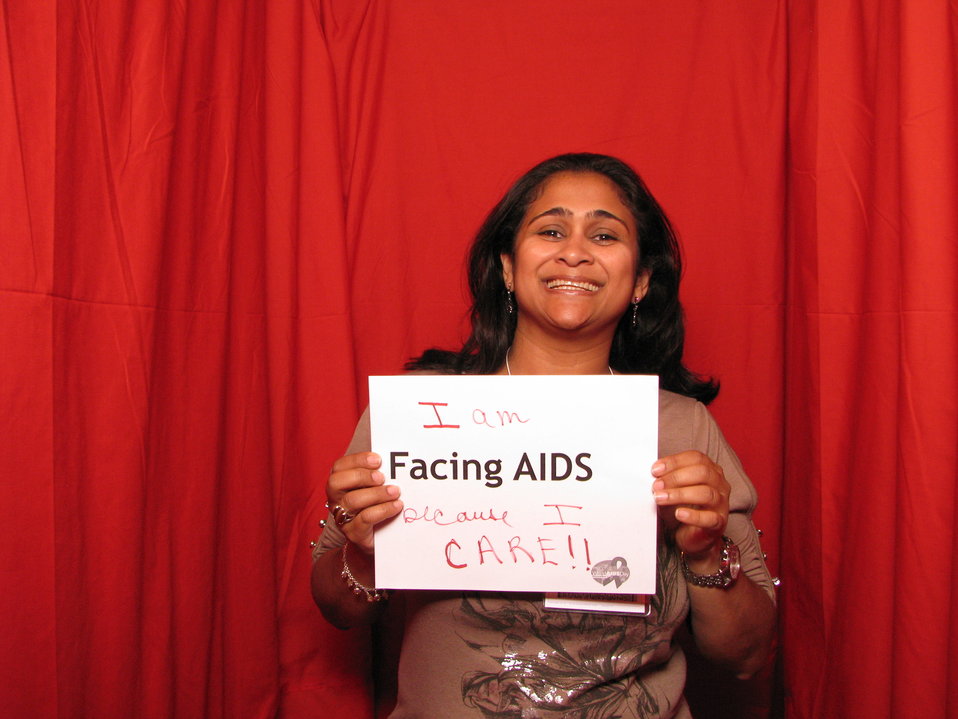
I am FACING AIDS because I CARE!!

From the AIDS.gov photo booth at the U.S. Conference on AIDS, September 2010 (Orlando, FL).